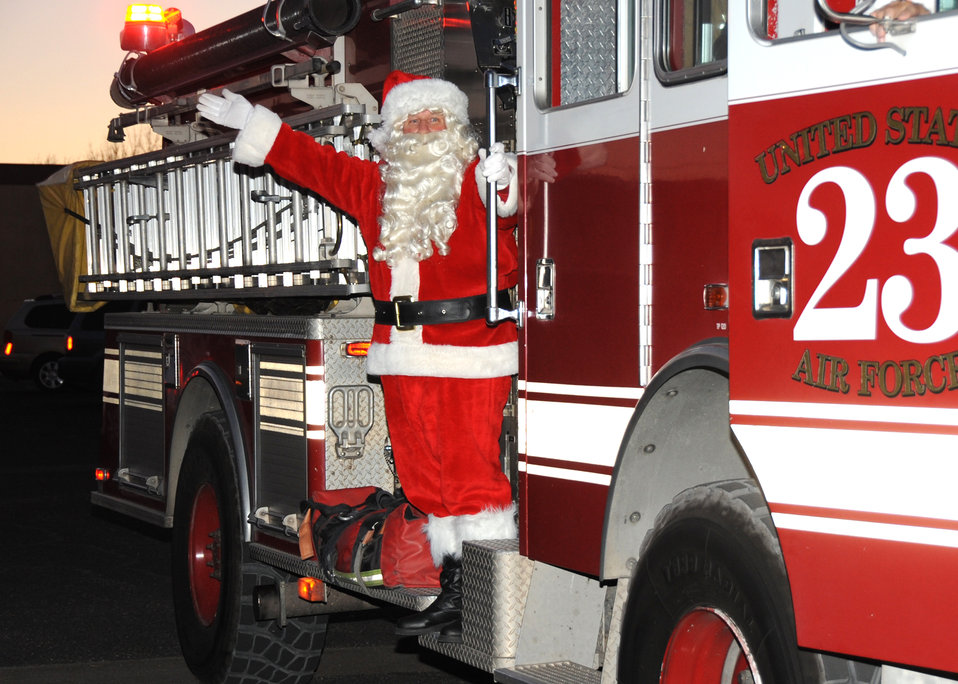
Santa's new ride

Santa Claus arrives on a base fire truck Dec. 2, 2010, at Kirtland Air Force Base, N.M., for the base Christmas tree-lighting ceremony near the chapel.